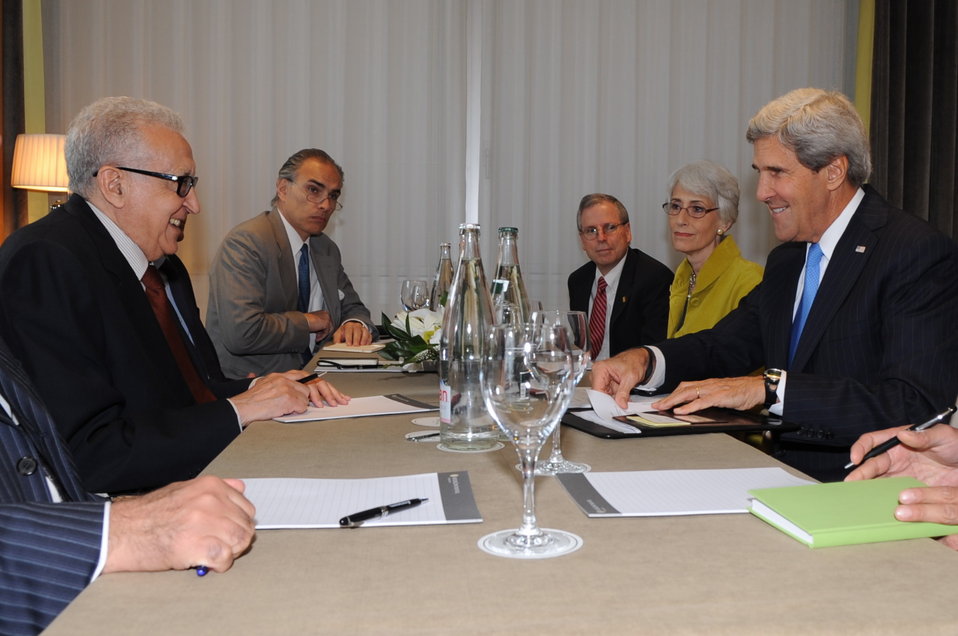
Secretary Kerry Meets with UN Special Envoy Brahimi in Geneva

U.S. Secretary of State John Kerry, Undersecretary Wendy Sherman, and U.S. Ambassador to Syria Robert Ford sit with United Nations and Arab League Special Envoy to Syria, Lakdhar Brahimi, before a meeting in Geneva, Switzerland, on September 12, 2013.